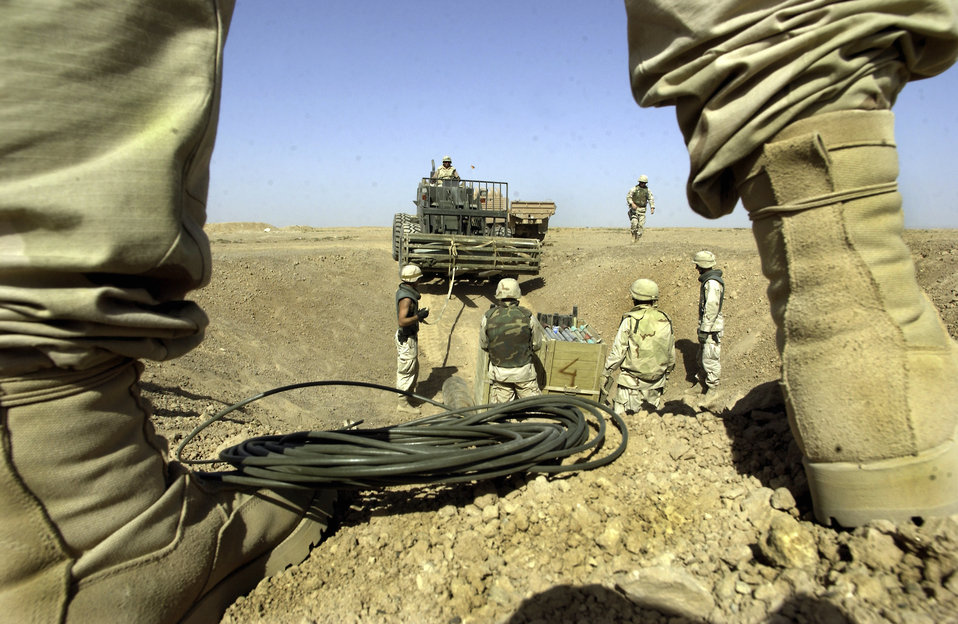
Disposing enemy ordnance

KIRKUK AIR BASE, Iraq -- Airmen of the 506th Expeditionary Civil Engineer Squadron's explosive ordnance disposal flight here add a 500-pound bomb to the pile of mortars, rockets, antiaircraft artillery shells, grenades and other recovered Iraqi weapons to be detonated.